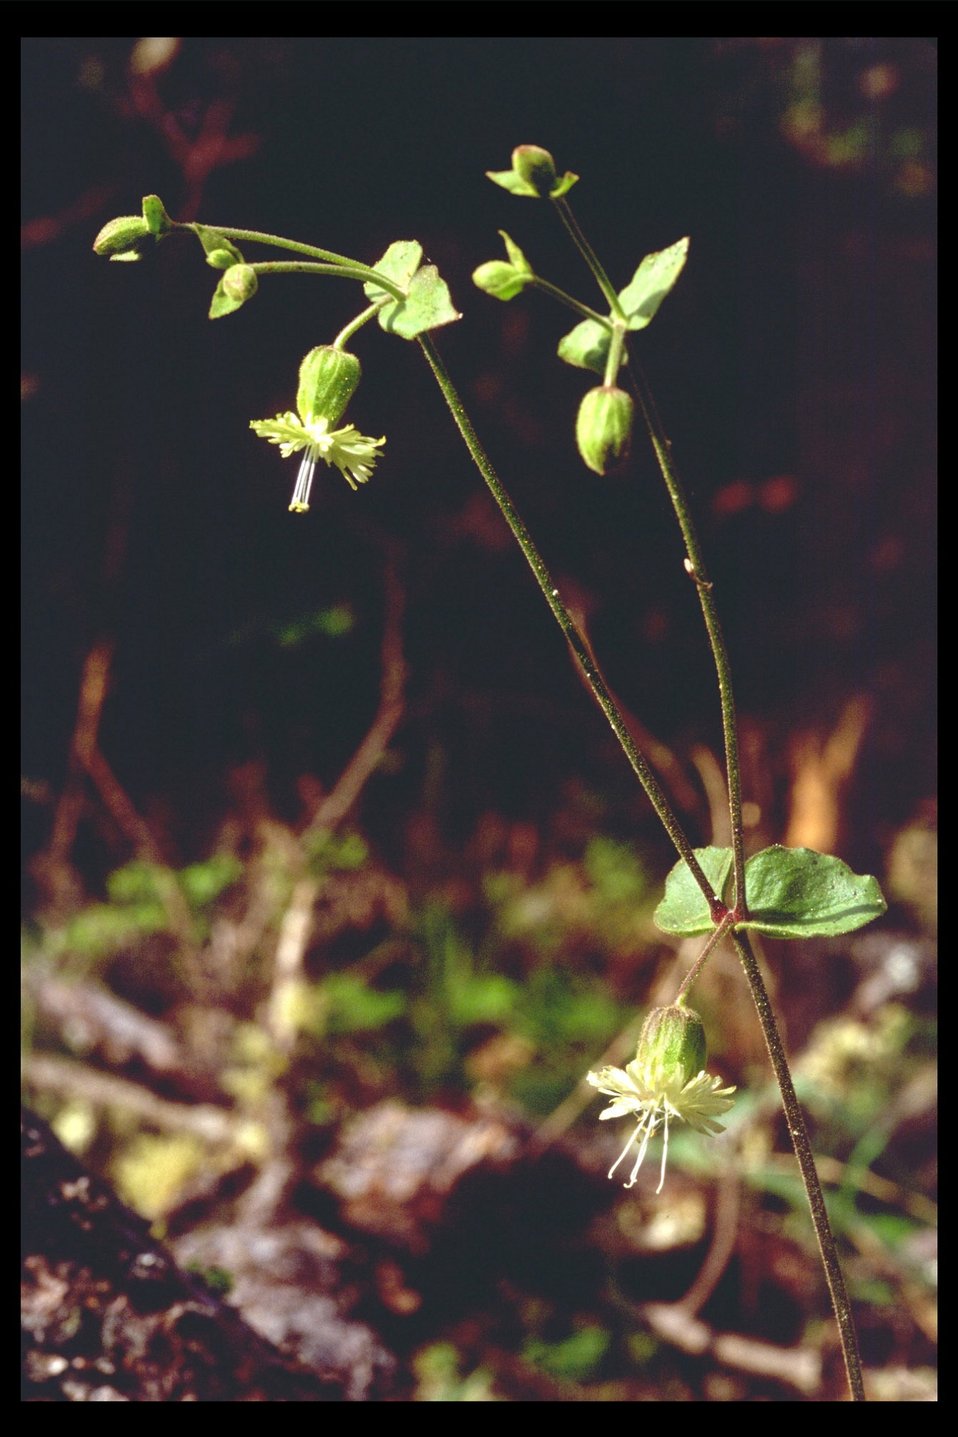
Catchfly (Silene campanulata) at Shady Cove near the Rogue River.